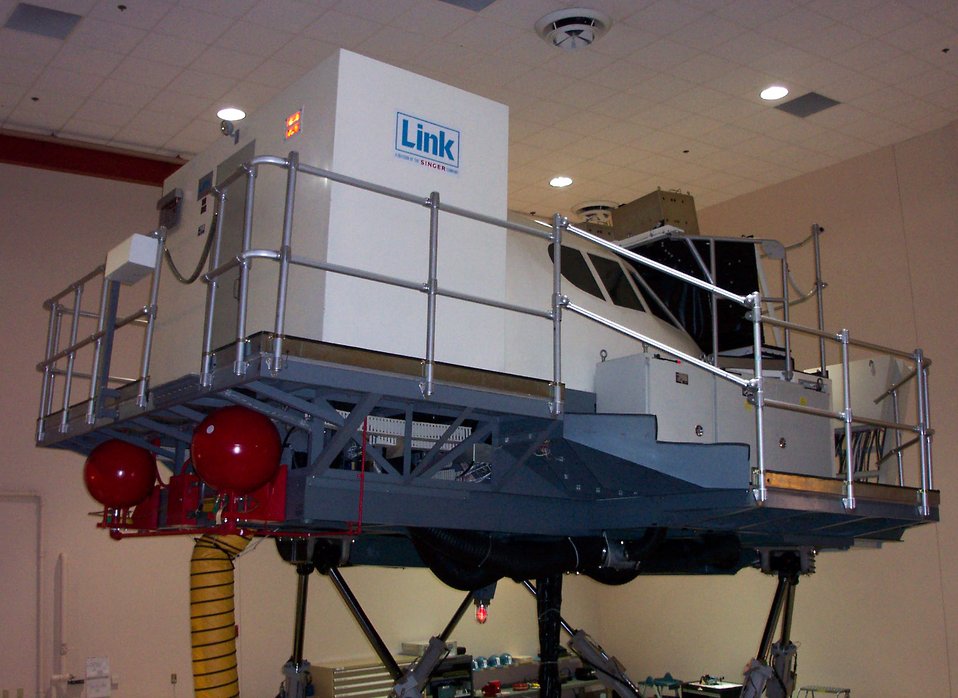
Air Warrior II

BARKSDALE AIR FORCE BASE, La. (AFPN) -- The weapons system trainer is the simulator used during Air Warrior II exercises allowing 11th Bomb Squadron students to connect via network to the action near Fort Polk, La. The B-52 Stratofortress trainer, acquired in 1995 from Castle Air Force Base, Calif., is one of two available for Airmen to use to strengthen their flying abilities.